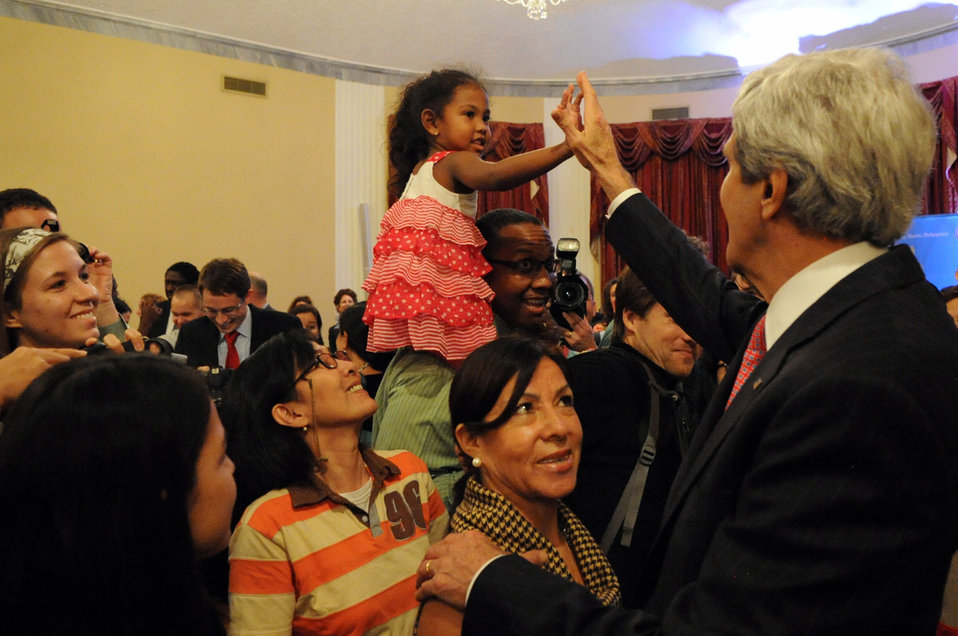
Secretary Kerry Greets a Family Member of Embassy Manila Staff

U.S. Secretary of State John Kerry exchanges a high-five with the daughter of a U.S. Embassy employee after addressing the staff in Manila on December 17, 2013.